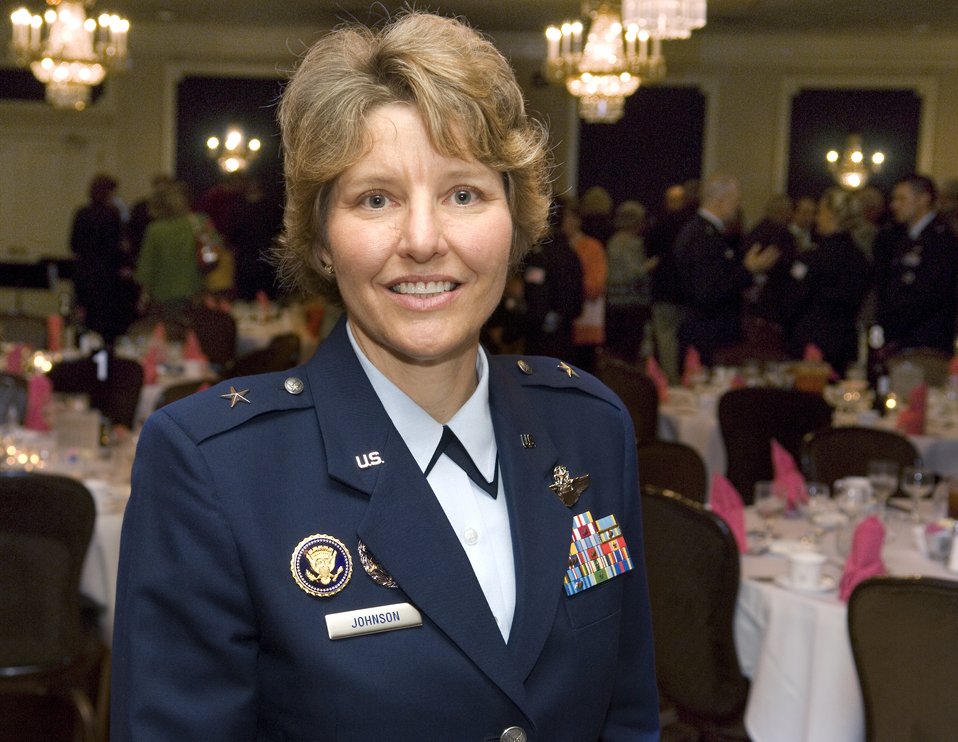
Female leaders from Omaha, Air Force gather at Offutt

Brig. Gen. Michelle D. Johnson pauses at the Ten Dinner Aug. 14 in the Patriot's Club at Offutt Air Force Base, Neb. General Johnson is the deputy director for global effects and the war on terrorism in the Strategic Plans and Policy Directorate on the Joint Staff in the Pentagon.